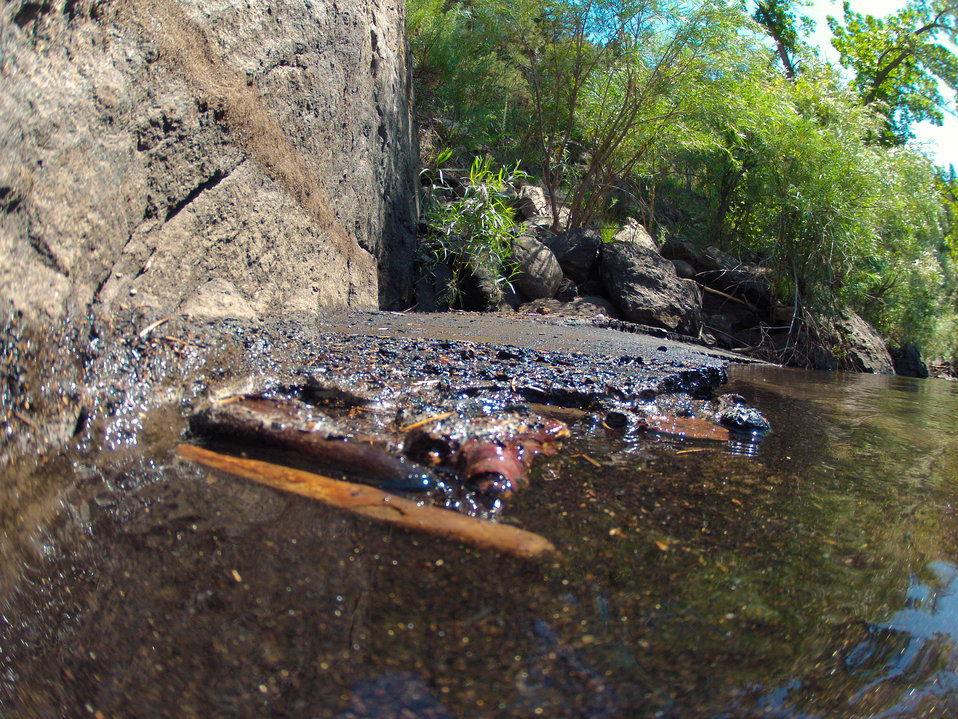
A confluence of two tributaries, the Cache la Poudre and the North Fork of the Cache la Poudre, near the Milton L. Seaman Reservoir, 60 miles north of Denver, Colorado on Friday, July 20, 2012, have been transformed from clear mountain waters to a nearly black water, heavily laden with ash, silt, and burnt debris that was recently washed down mountainsides by thunderstorms. The mountainsides were burned by the Hewlett Gulch Fire (May 14, 2012), in the Poudre Canyon area. At its peak more than 400 firefighters were battling fires pushed by 50 mph winds. When the last embers were cooled, more than 12-square miles lay blacked at a cost of approximately 3.2 million dollars. The aerial distribution of straw has successfully kept nearby Seaman Reservoir clean for the drinking water of the City of Greeley. Forest Service lands receive straw, while private and other lands receive a seed mix and straw to promote ground cover plant growth on ash-covered lands. In total, 1,800 tons of straw will be applied during the 14-day operation. One quarter of the cost was paid by the City of Greeley and the U.S. Department of Agriculture funded the remainder.